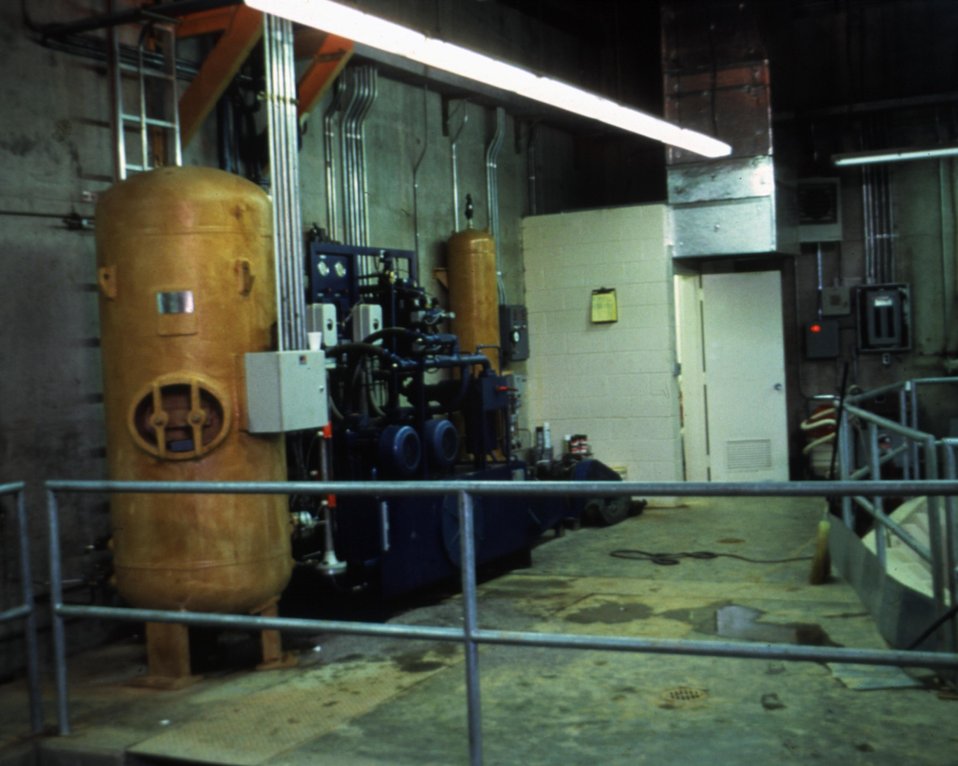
GENERAL VIEW OF AUXILIARY EQUIPMENT FLOOR.

THE DOE SMALL-SCALE HYDROPOWER PROGRAM CONSISTS OF 19 PROJECTS AND DEMONSTRATES THE VIABILITY OF SMALL-SCALE HYDRO-POWER WITH AVAILABLE TECHNOLOGY. THE BROAD RIVER PROJECT, BEGUN IN JANUARY, 1983, WENT ON LINE DECEMBER 27, 1987. UTILIZING ONE OPEN-PIT TUBULAR TURBINE THAT PRODUCES A MAXIMUM OF 4,140 KILOWATTS, THE DAM PROVIDES A GROSS HEAD OF 20.2 FEET WITH AN ANNUAL STREAM FLOW OF 2,472 CFS.